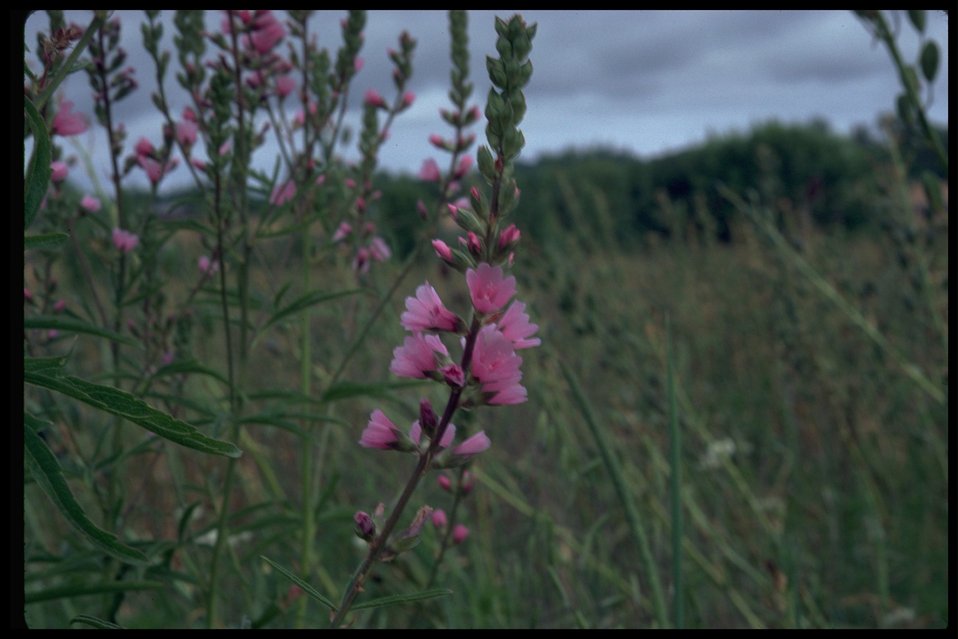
Medium shot of Cusick's sidalcea (Sidalcea cusickii).